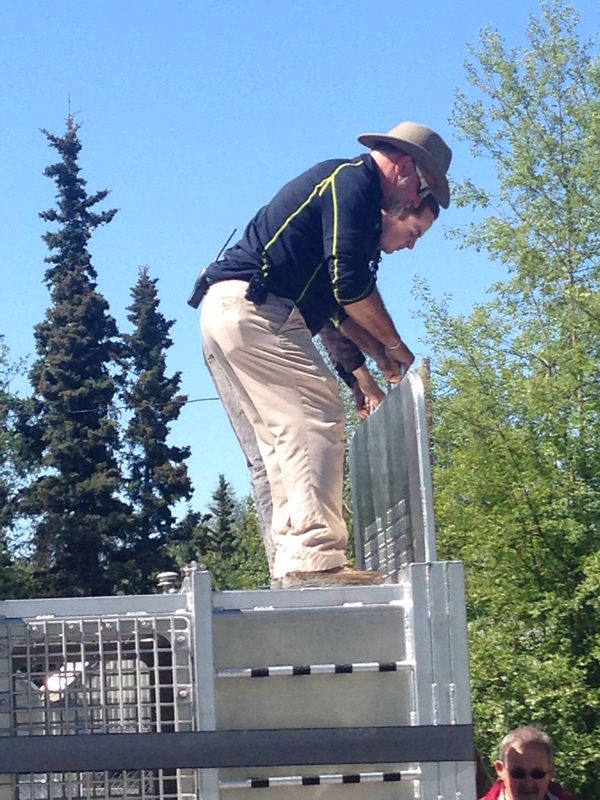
photo (1) sm

Press Conference on the polar bear holding module. USFWS/Rose Primmer